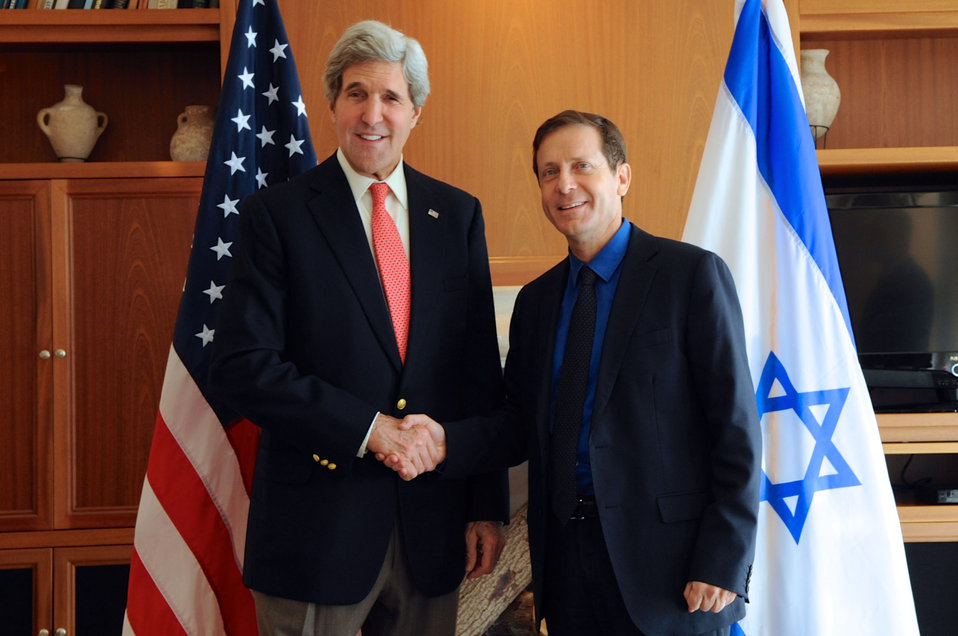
Secretary Kerry Meets With Israeli Labor Party Leader Herzog

U.S. Secretary of State John Kerry poses for photographers with Israeli Labor Party Leader Isaac Herzog before the two held a meeting in Jerusalem on January 6, 2014.